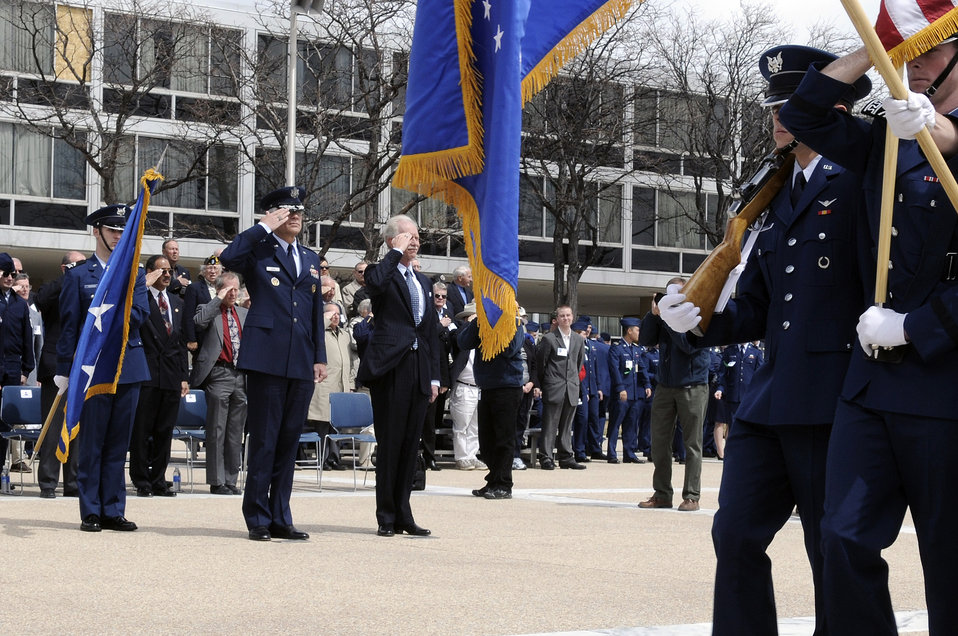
Hero of the Hudson visits alma mater

Air Force Academy Superintendent Lt. Gen. John F. Regni and 1973 U.S. graduate and classmate Chesley